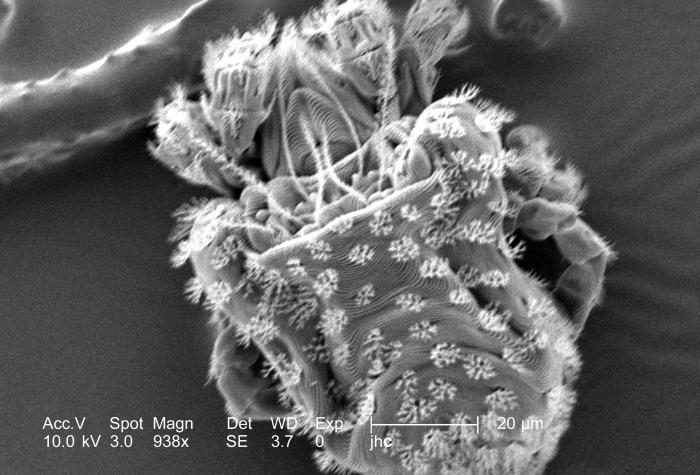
Under a moderately high magnification of 938x, this scanning electron micrograph (SEM) revealed the presence of numbers of mites from the specie Nanorchestes sp., Family Nanorchestidae. Members of this specie are free-living, fungivorous soil and leaf-litter/moss mites that were simply an incidental finding on the skin of this lizard. It is not a lizard associate per se, and certainly not parasitic. Under higher magnifications, i.e., PHIL 8808, 8809, the mite's exoskeletal complexities are better appreciated in their diaphanous majesty.